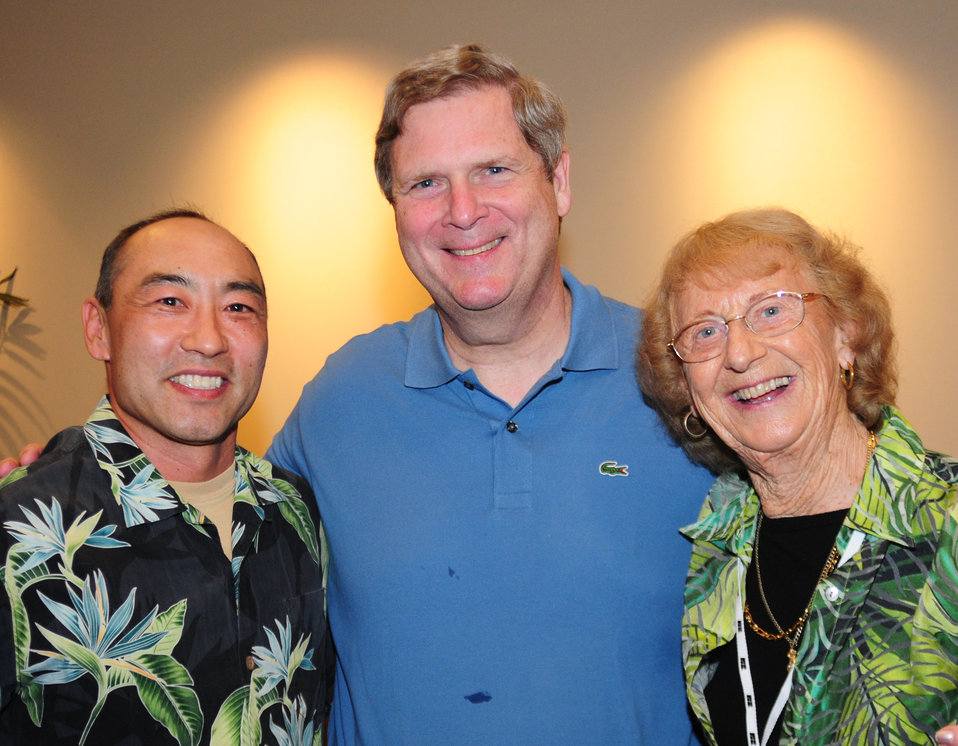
Agriculture Secretary Tom Vilsack takes a moment to pose with President of Miya Farms, Inc, Michael Miya (left) and Santa Cruz County Board Member Nita Gizdich during the California Farm Bureau Federation event at the Hilton Hawaiian Village, in Waikiki, Hawaii, on Sunday, January 8, 2012.